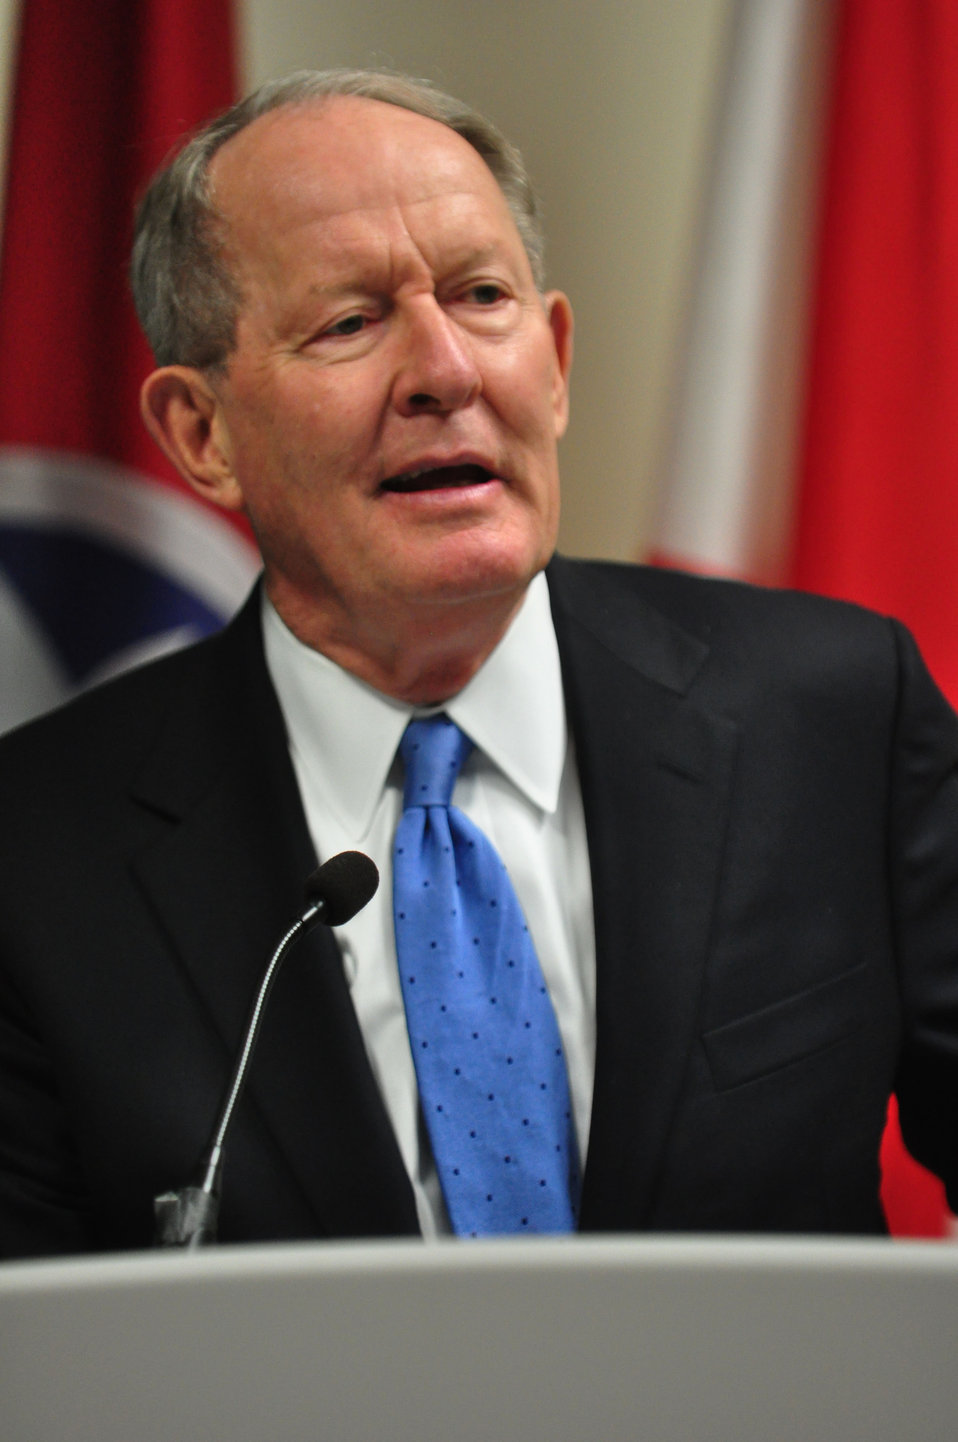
U.S. Senator Lamar Alexander Tennessee Valley Corridor Summit Oak Ridge

13-062 DOE photo Lynn Freeny 5-29-2013 Oak Ridge Tennessee